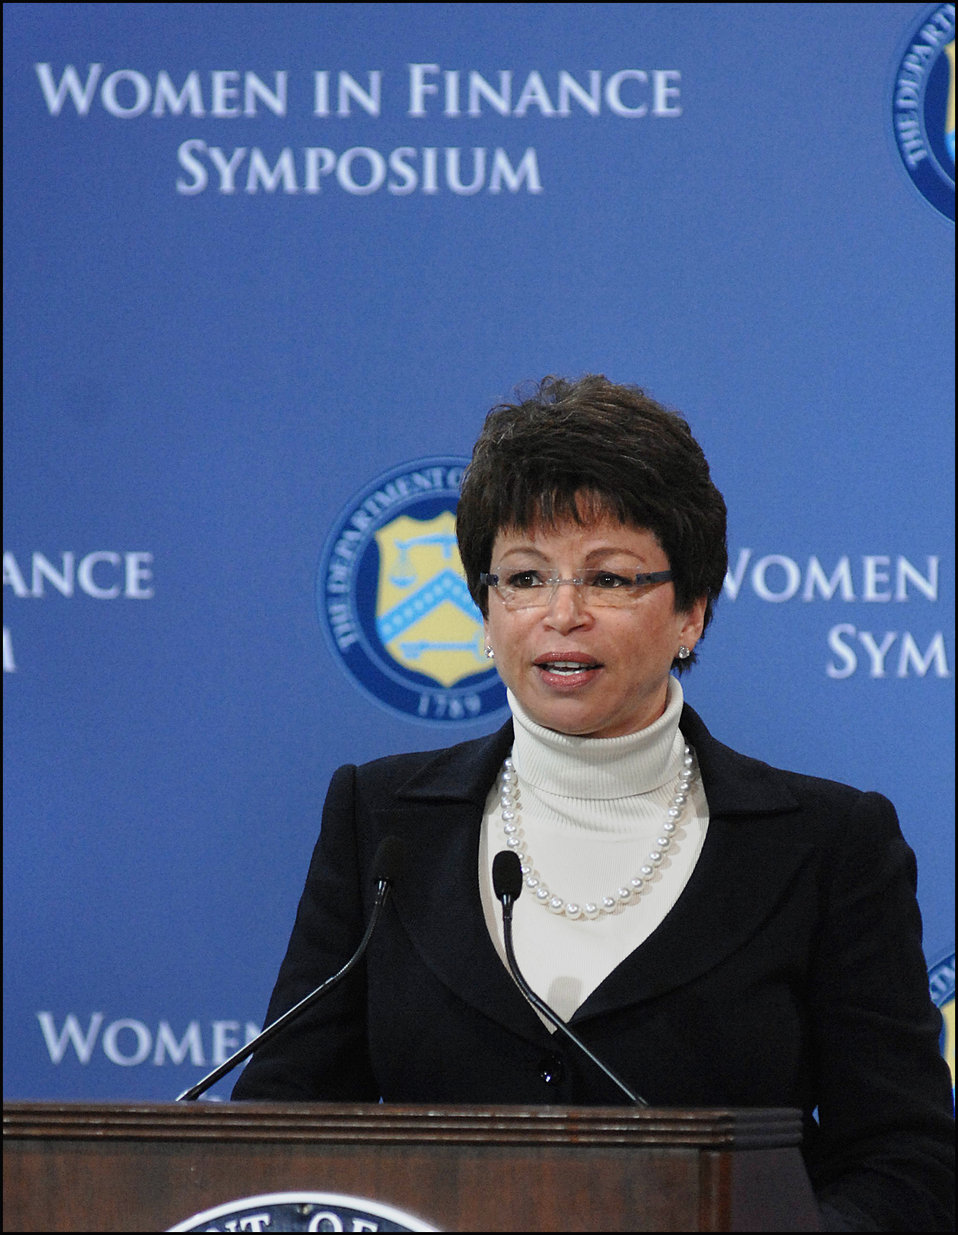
Women in Finance Symposium, 03/29/2010

Valerie Jarrett, Senior Advisor and Assistant to the President, discussing the White House Role in support of women in finance at the Treasury Department on March 29, 2010.